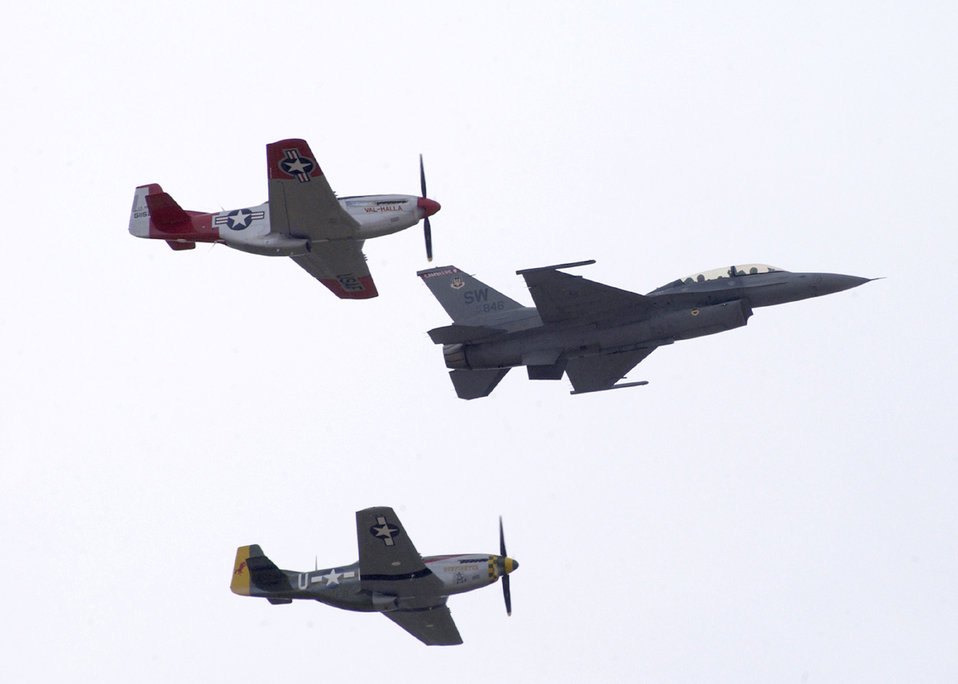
Formation flying

OVER DAVIS-MONTHAN AIR FORCE BASE, Ariz. -- Two P-51 Mustangs and an F-16 Fighting Falcon fly in formation at the 2005 Heritage Flight Conference here. The Heritage Flight program was established in 1997 supporting the Air Force's 50th anniversary. It involves today's state-of-the-art fighters flying in close formation with World War II and Korean War vintage fighters. The flight is designed to safely display the evolution of U.S. Air Force airpower and support Air Force's recruiting and retention efforts.